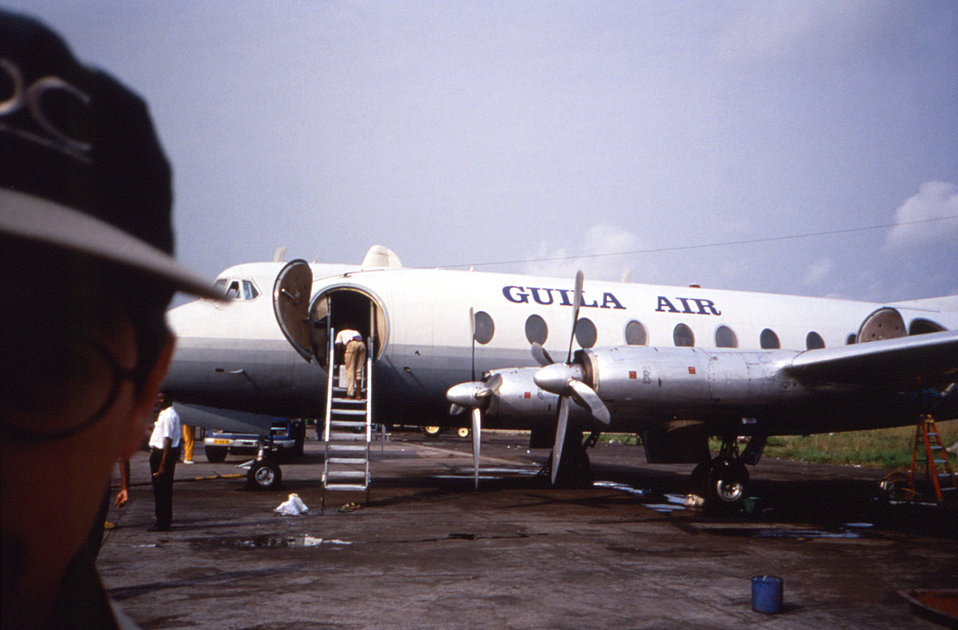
This image was created during an investigation into an outbreak of monkeypox, which took place in the Democratic Republic of the Congo (DRC), 1996 to 1997, formerly Zaire. Though never used, this Guila Air cargo plane had been contracted by American zoologist, Delphi Messinger. In February 1997, 88 cases of febrile pustular rash had been identified over the previous 12 months in 12 villages within this Katako-Kombe Health Zone, DRC.